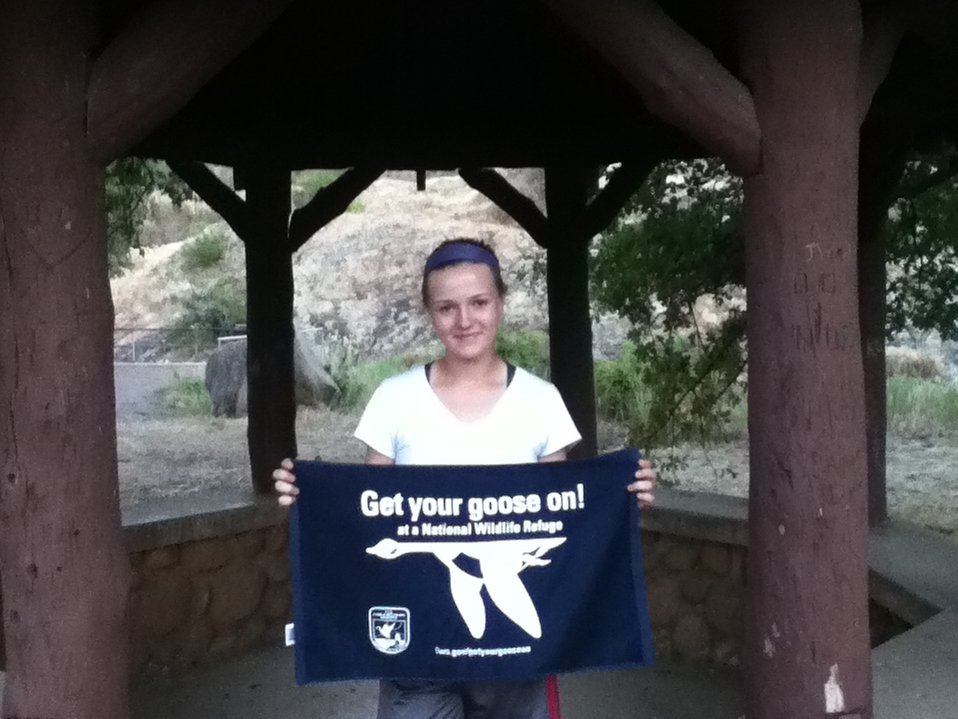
Get Your Goose On!

Wichita Mountains National Wildlife Refuge in Oklahoma.